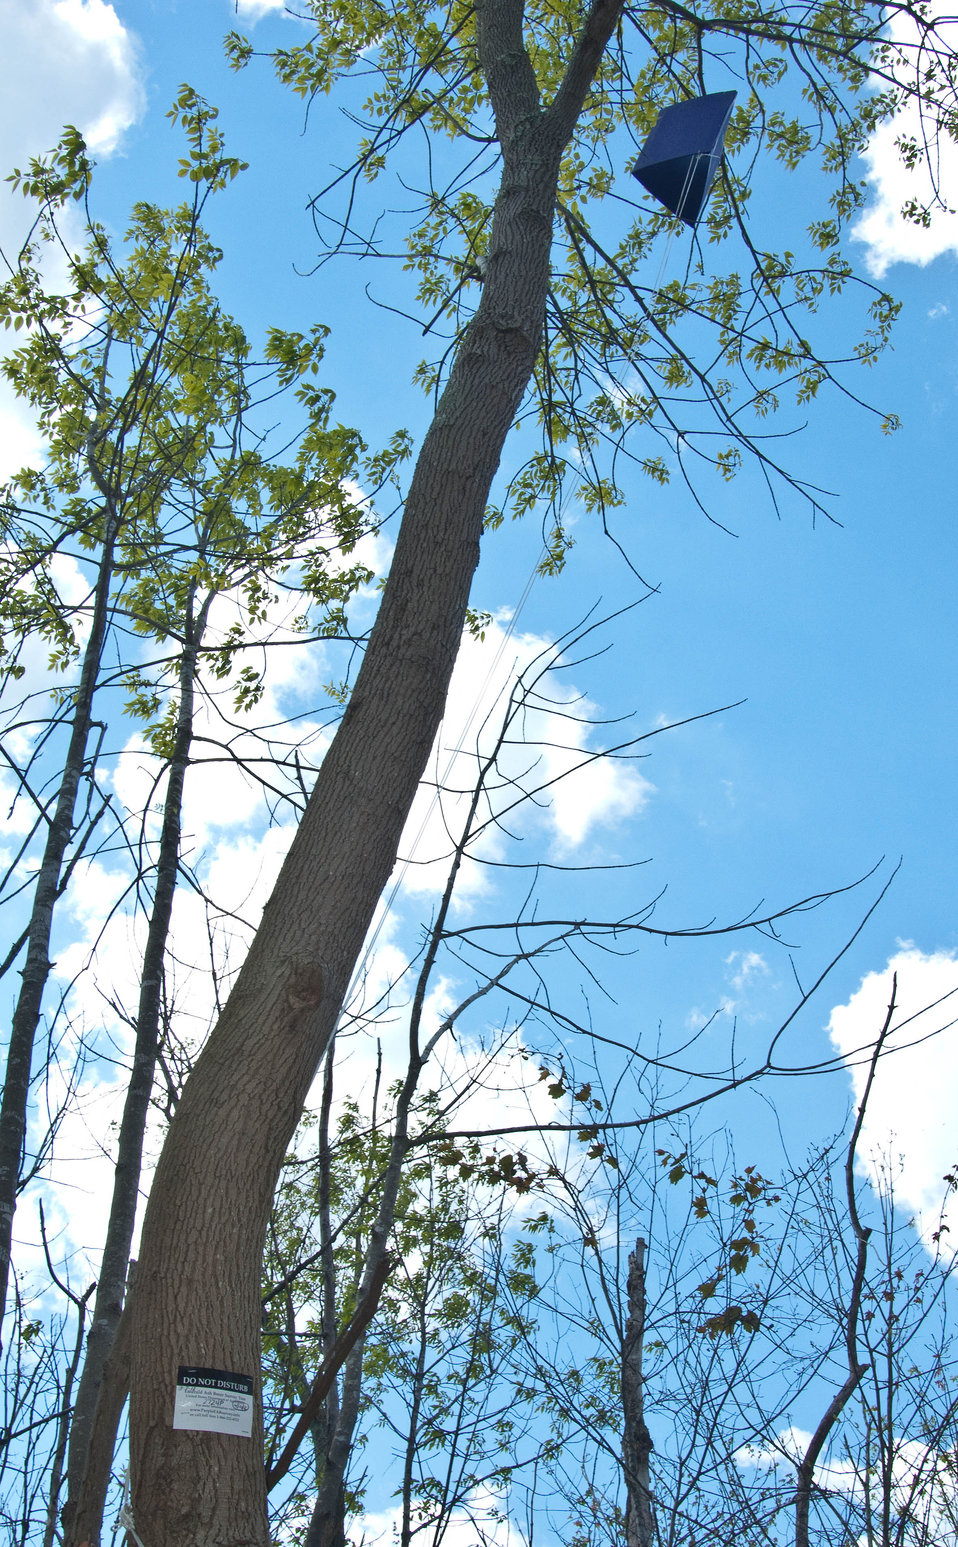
These large, purple traps are used to identify and track emerald ash borer (EAB) and assist officials in developing strategies to help prevent the spread of this invasive, ash-killing beetle. Patuxent Wetlands Park in Anne Arundel County, MD, on Tuesday, April 10, 2012.